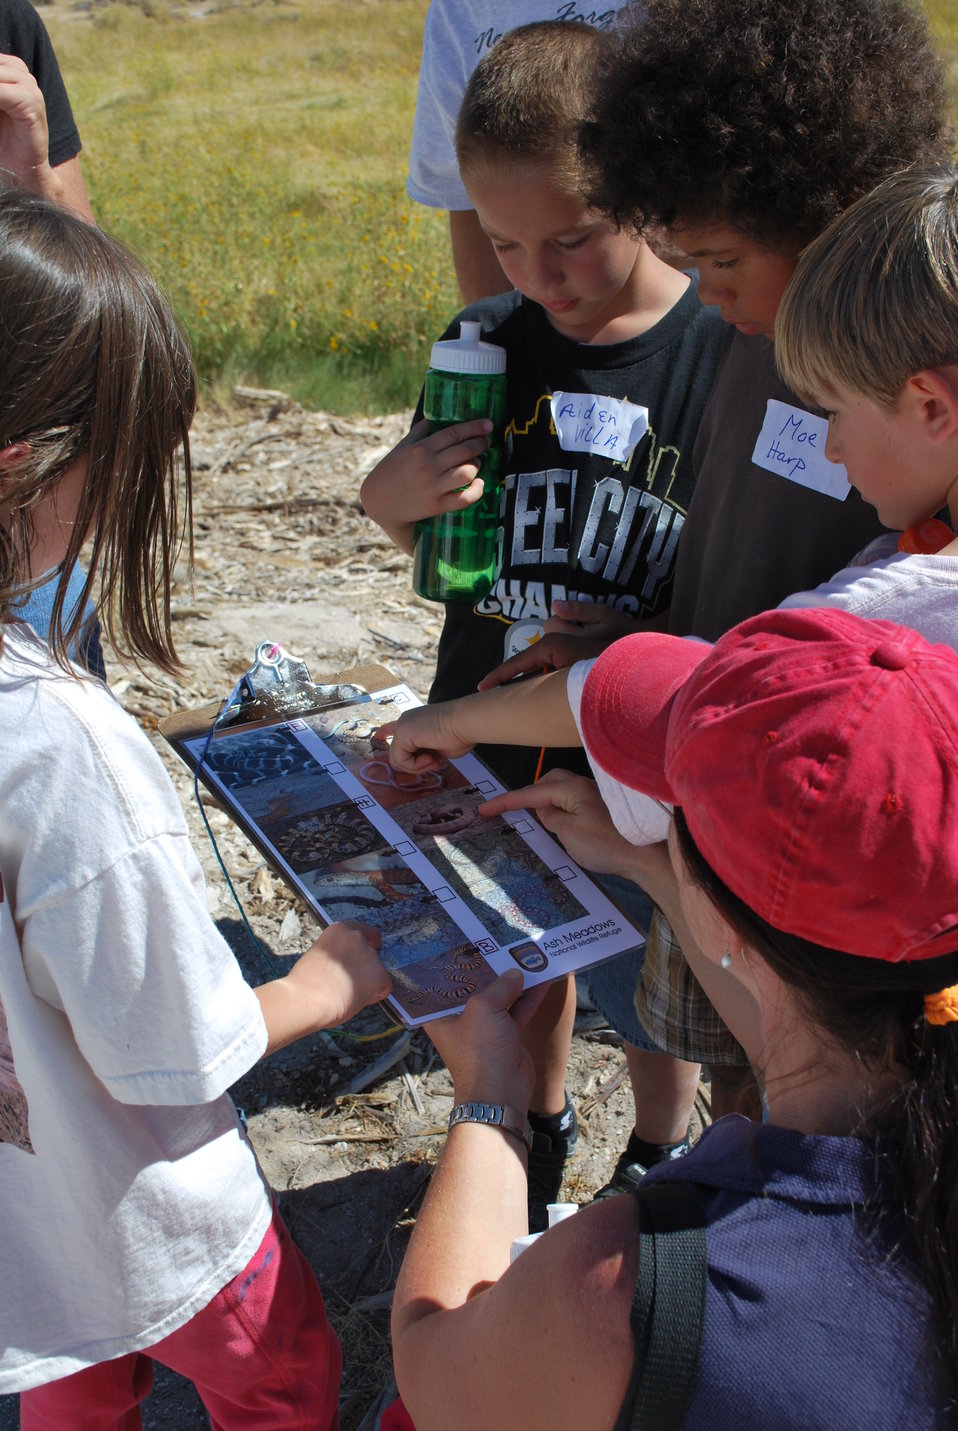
The reptile scavenger hunt

Kids work together to figure out which reptile species are native to their area - Amargosa Valley, Nevada. Stephanie Kyriazis/USFWS